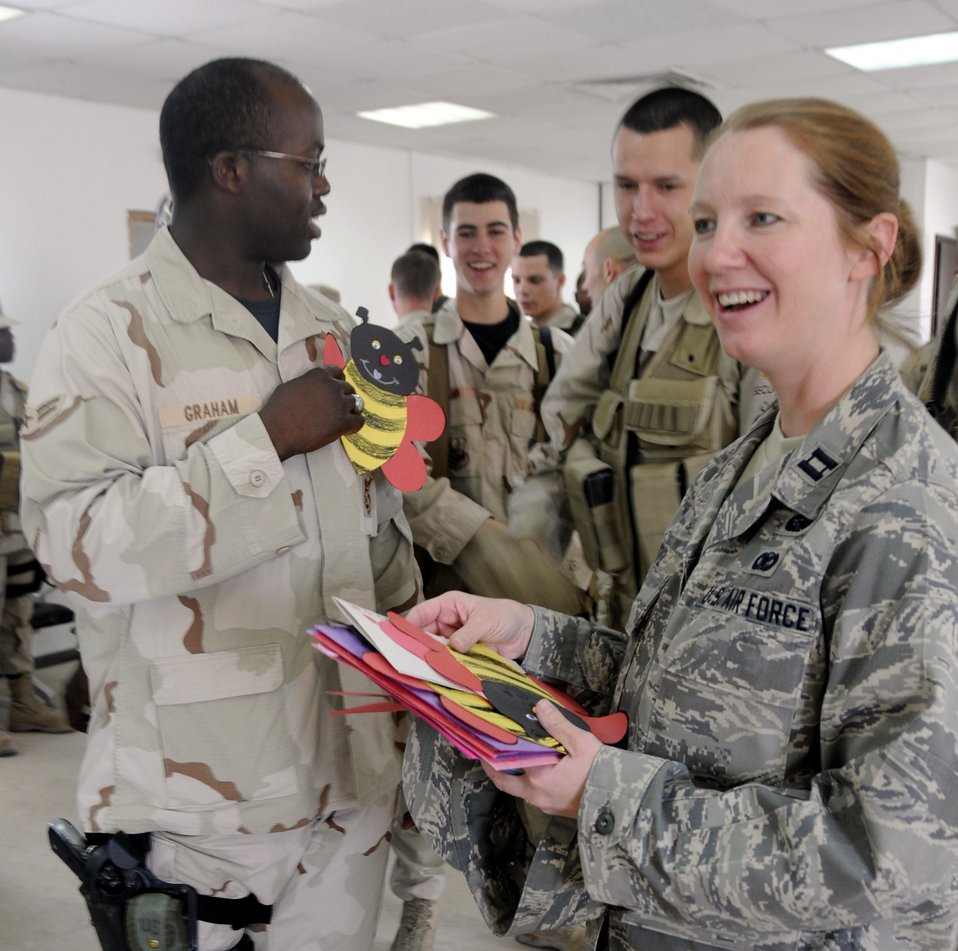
Texas schools send Valentines to Southwest Asia Airmen

Capt. Meredith Ortiz hands out cards to members of the 379th Expeditionary Security Forces Squadron Feb. 13 at a Southwest Asia air base. Students from Merkel, Ty and Trent elementary schools mailed more than 300 Valentines to the base, thanking Airmen and coalition forces for their service and asking,